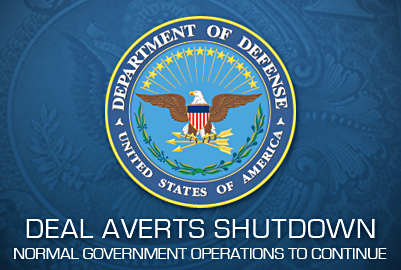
Deal Averts Shutdown, Normal Government Operations to Continue